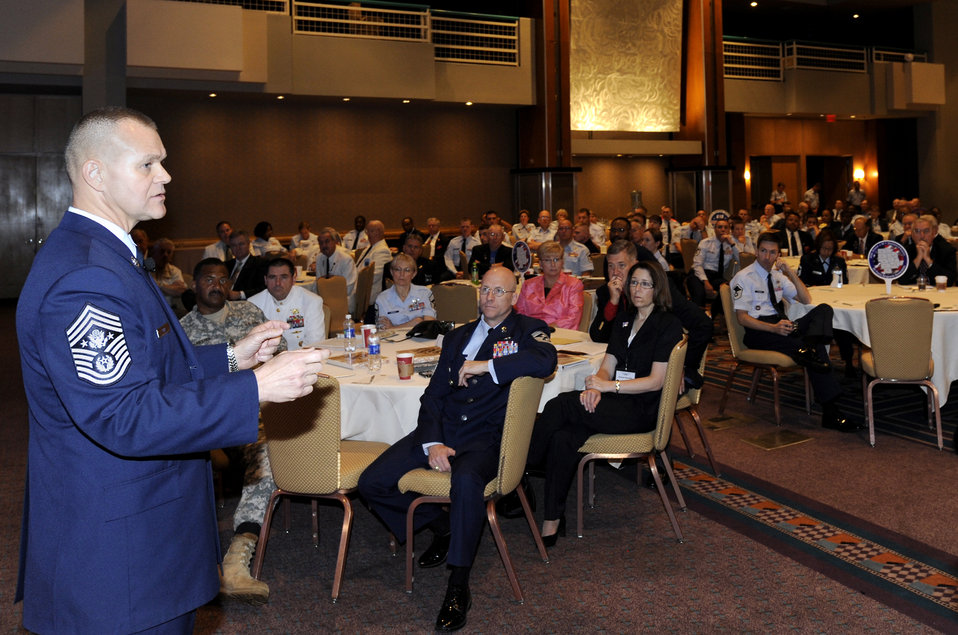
CMSAF shares perspective about readiness, development, resiliency

Chief Master Sgt.of the Air Force James Roy responds to questions from Airmen attending the Air Force Sergeants Association Professional Airmen's Conference Aug. 17, 2010, in Atlanta. Some of his key points were joint/coalition readiness, deliberate development and resiliency among Airmen and their families.